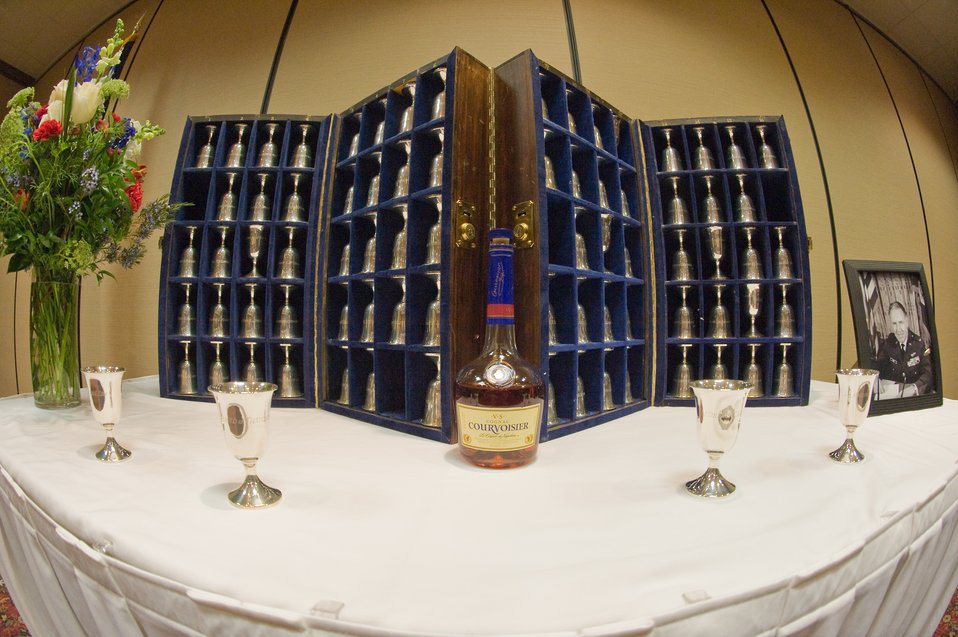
Doolittle Tokyo Raiders' Goblet Ceremony

Goblets for Doolittle Raiders (left-right) Master Sgt. David J. Thatcher, Lt. Col. Richard E. Cole, Major Thomas Griffin, and Lt. Col. Robert L. Hite stand charged and ready for the Goblet Ceremony on April 16, 2010 in Fairborn, Ohio. The ceremony honors all who participated in the Doolittle Raid on Tokyo during W.W. II. This ceremony also honored the career and passing of Col. James H. Macia, Jr. (seen in framed photo).The upright goblets represent aircrew who have survived to this day. During the ceremony the name of every person was read and a Doolittle Raider responds to indicate the spirit of those who passed are present. The collection of goblets, each with an aircrew name engraved both right side up and upside down. The set of goblets is now maintained by the National Museum of the U.S. Air Force.